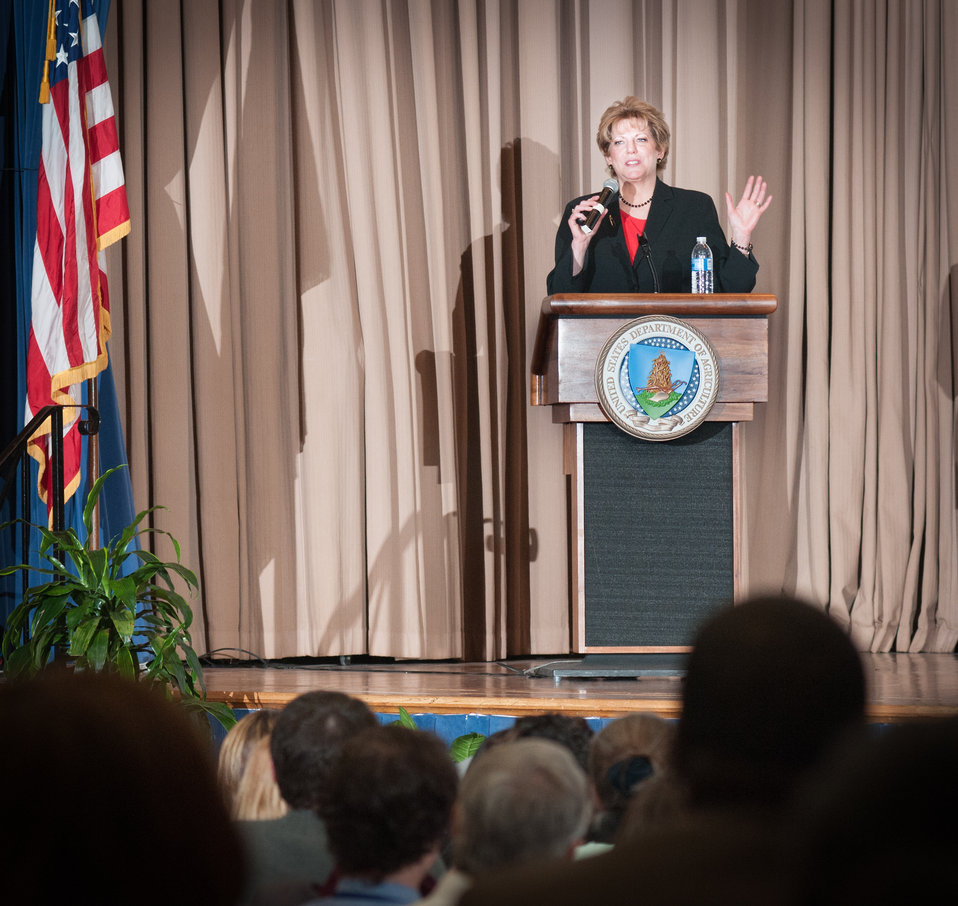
American Association of University Women Executive Director and CEO Linda Hallman, the keynote speaker, during the U.S. Department of Agriculture (USDA) 2013 Women’s History Month Observance event, “Women Inspiring Innovation Through Imagination: Celebrating Women in Science, Technology, Engineering, and Mathematics, Thursday, March 21, 2013, in Washington, D.C. Additional remarks were made by Agriculture Deputy Secretary Dr. Kathleen Merrigan; Administration Deputy Assistant Secretary Deputy Assistant Secretary Robin Heard; and Agriculture Research Service National Programs Associate Administrator Dr. Chavonda Jacobs-Young.